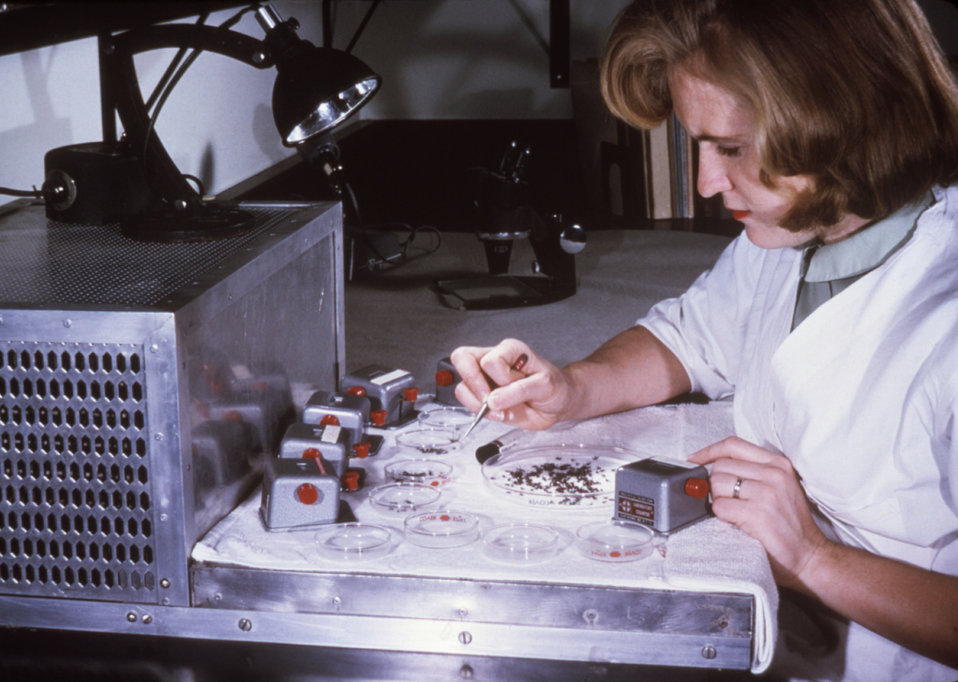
A CDC laboratorian is shown here working with mosquito filled tubes that were used in a virus isolation study.